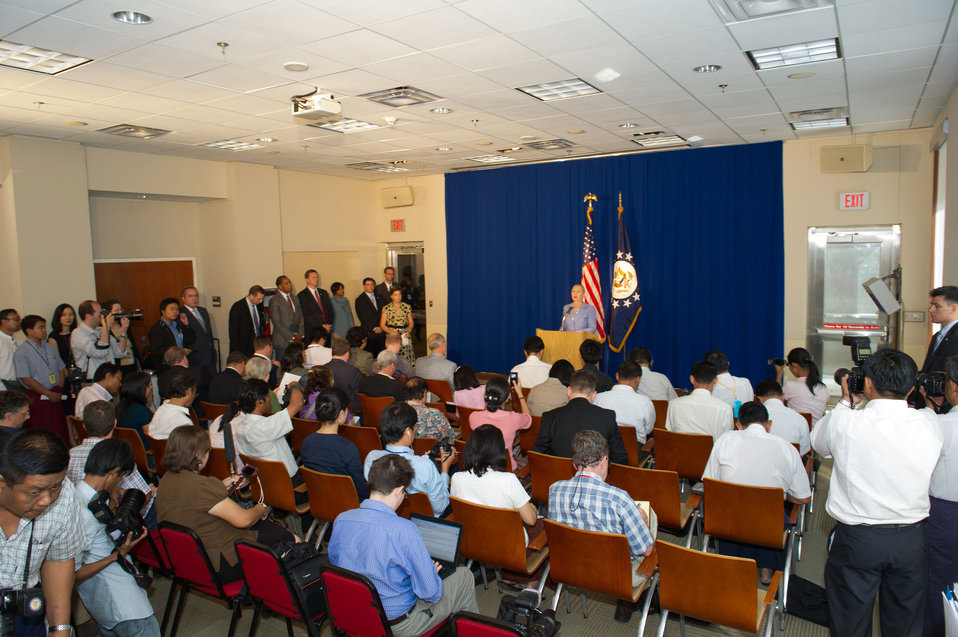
Secretary Clinton Addresses Burmese Media

U.S. Secretary of State Hillary Rodham Clinton addresses Burmese media at the U.S. Embassy in Rangoon, Burma, on December 2, 2011.